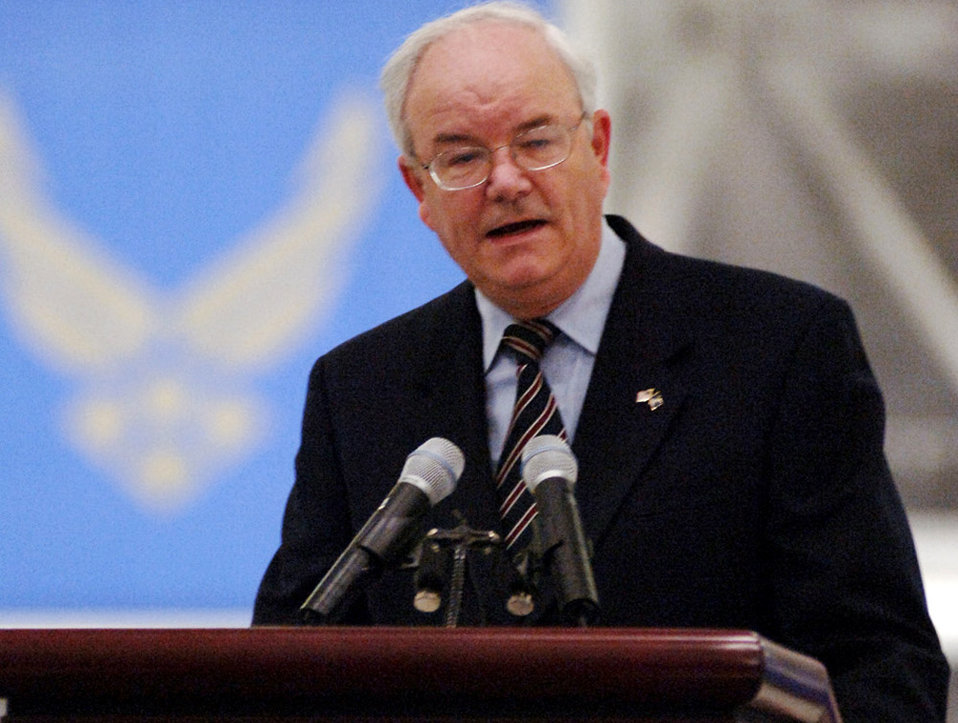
SECAF addresses AFA conference

Secretary of the Air Force Michael W. Wynne addressed various issues facing today's Airmen and focused on the air, space and cyberspace domains during his remarks Sept. 24 at the Air Force Association's Air & Space Conference and Technology Exposition in Washington.